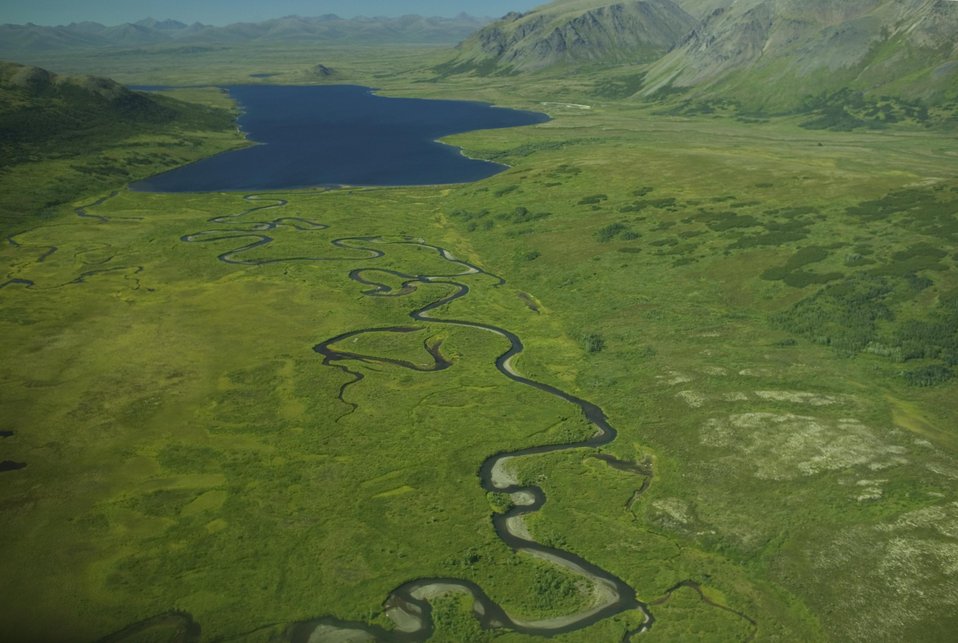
Togiak National Wildlife Refuge